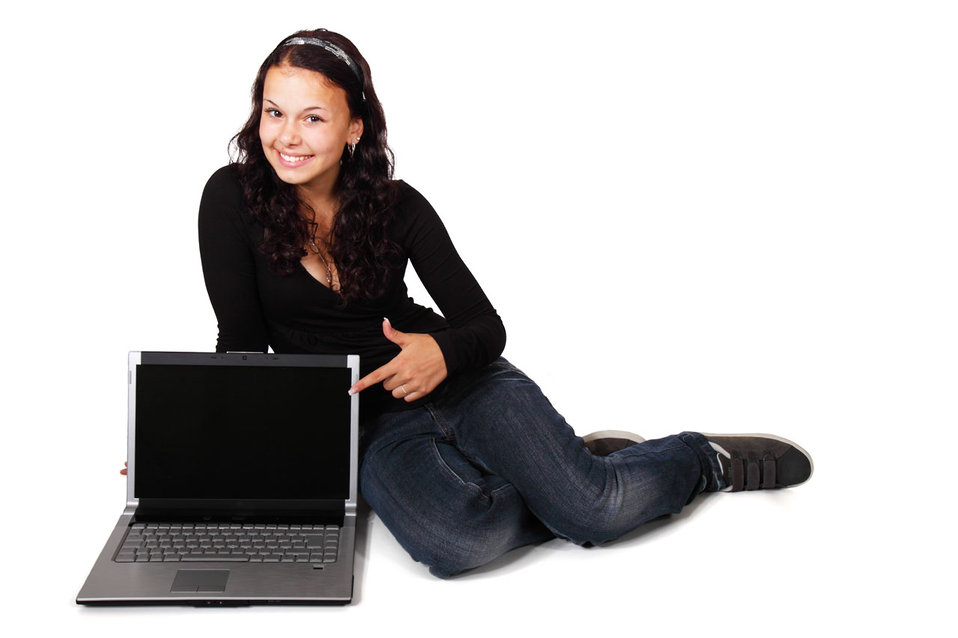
Woman pointing at a computer

A young woman pointing at laptop isolated on white background.